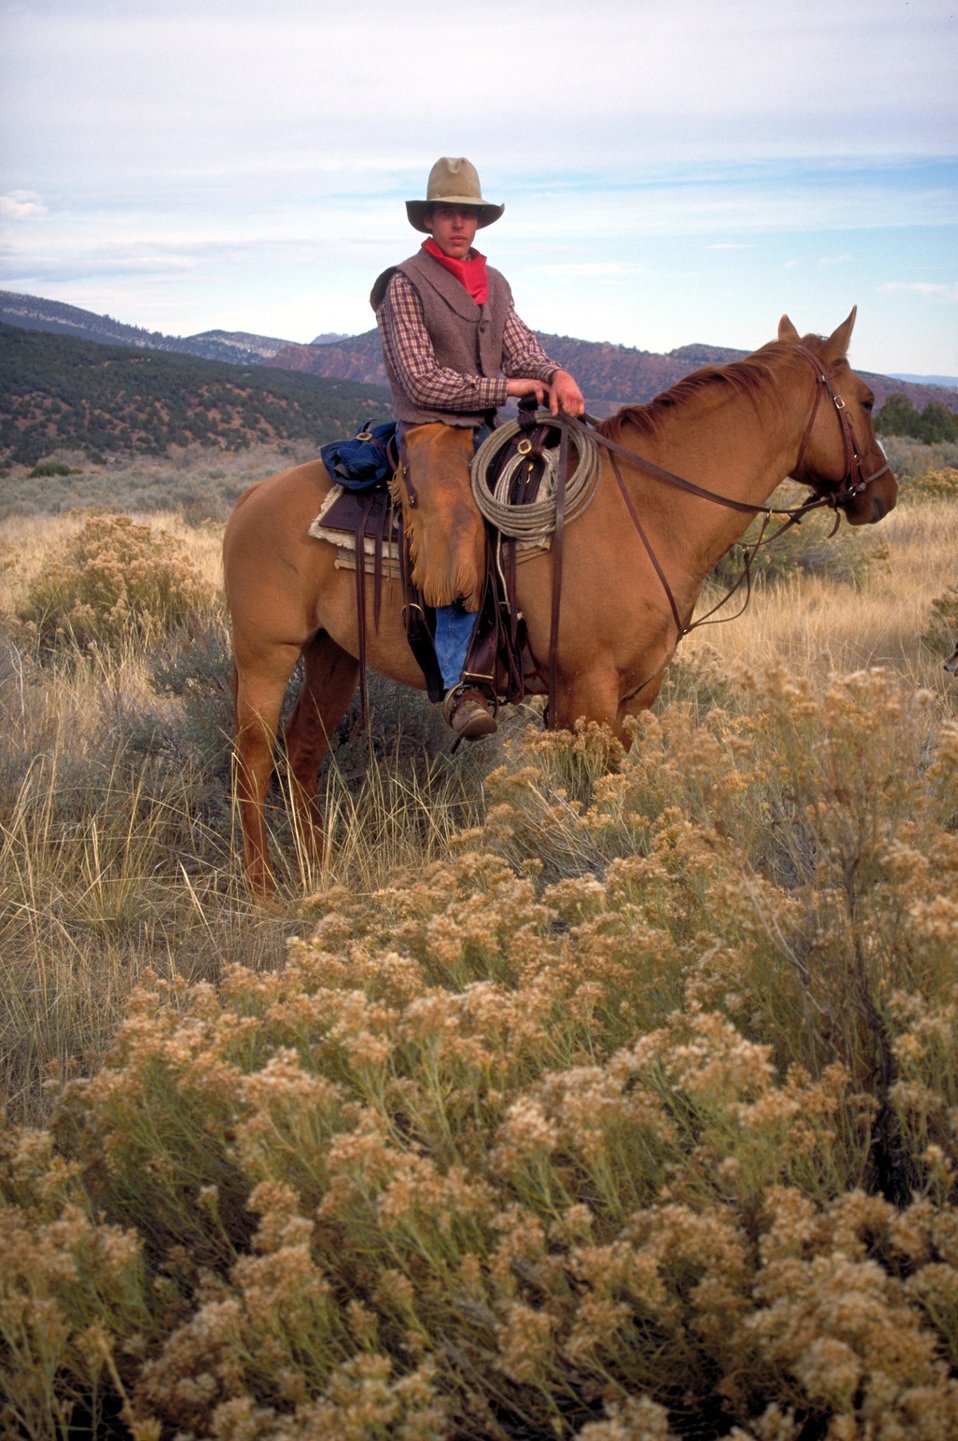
Working cowboys living near Vernal, Utah.